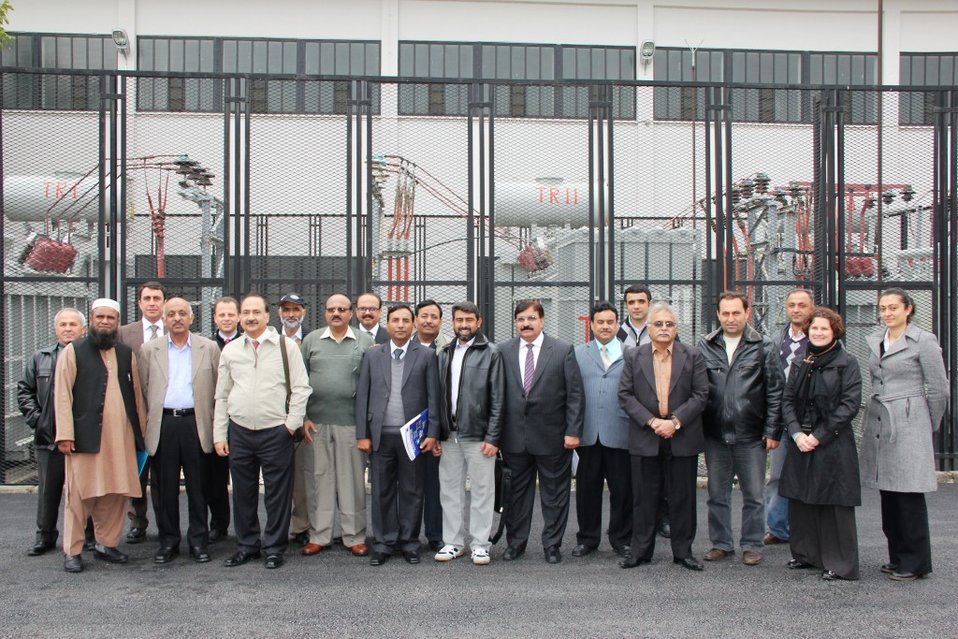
17 Nov - Delegation to Turkey under Utility Exchange Program- AYEDAS substation

USAID Power Distribution Program in liaison with United States Energy Association (USEA) organized a Utility Exchange Program in Istanbul and Ankara Turkey from November 1 2 - 19, 2011.Twelve delegates were selected from 9 DISCOs of Pakistan through a structured nominations and a selection process. The delegates visited the following number of power companies in Turkey:
1. BEDAS - Baskent Electricity Distribution Company, Ankara
2. TEDAS -Turkish Electricity Distribution Company, Ankara
3. AYEDA- Electricity Distribution Company, Istanbul
4. BEDAS - Electricity Distribution Company, Istanbul
The main focus of the Program was learning best practices and functions in Commercial Management, Financial Management and Customer Information Systems.